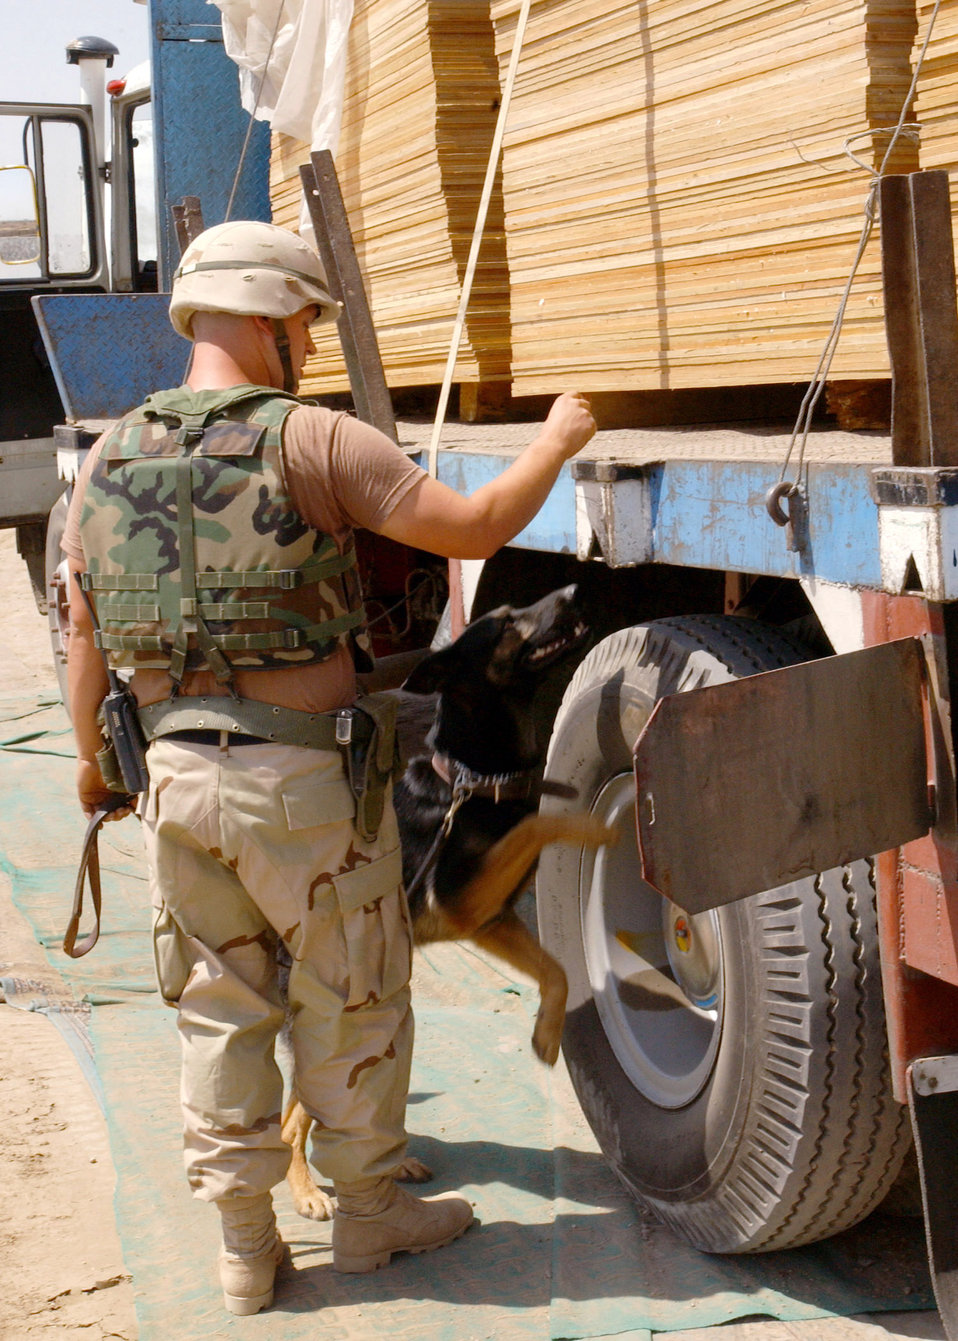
Hartley and Cody

BAGHDAD, Iraq --Staff Sgt. Dan Hartley, 447th Expeditionary Security Forces Squadron military working dog handler, and military working dog, Cody, check for explosives on a vehicle at a Baghdad International Airport checkpoint. They are one of several military working dog teams here supporting Operation Iraqi Freedom. Hartley and Cody are both deployed from the 66th Security Forces Squadron at Hanscom Air Force Base, Mass.